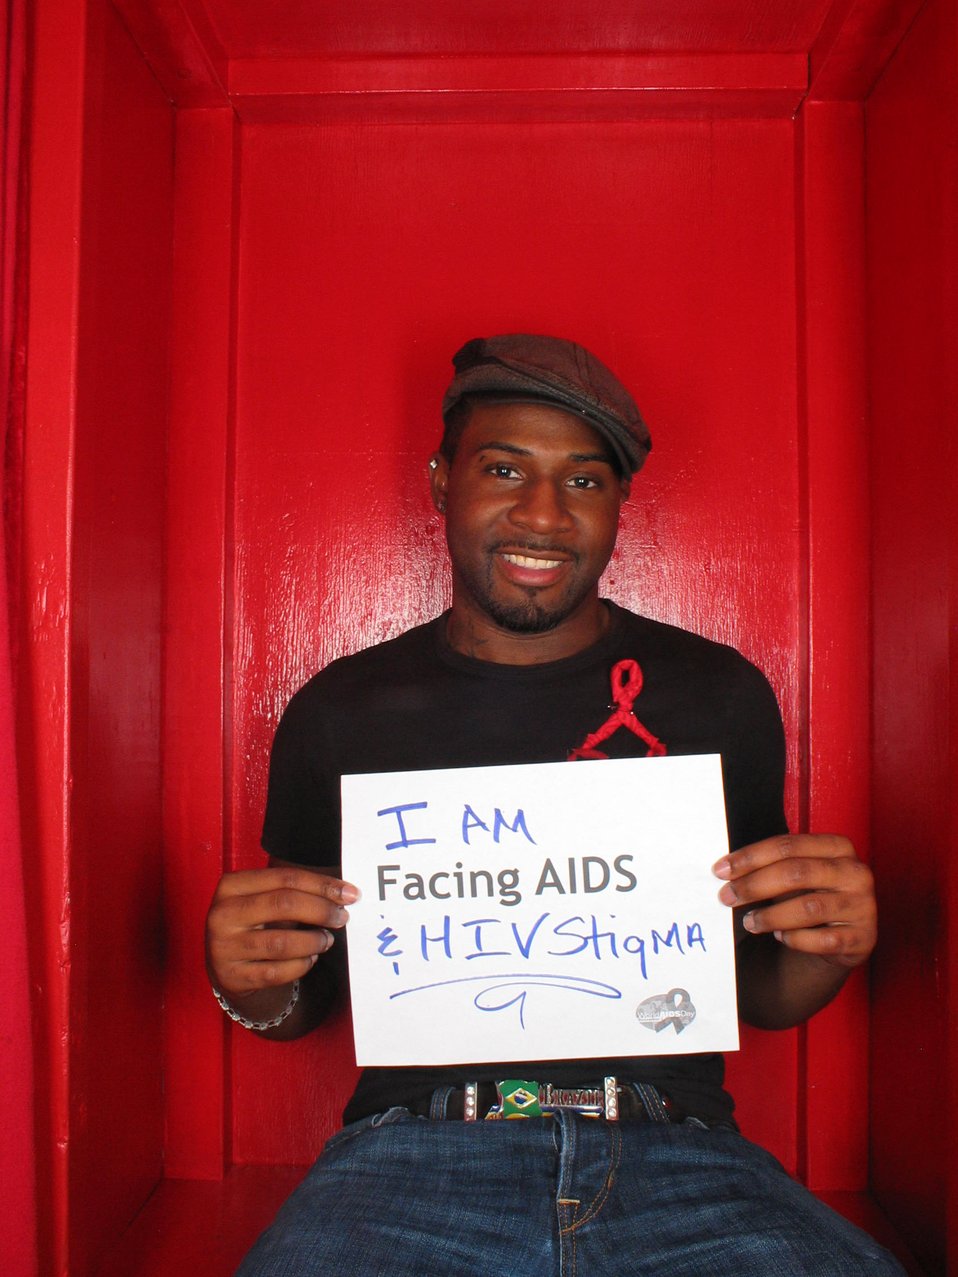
I am Facing AIDS and HIV stigma.